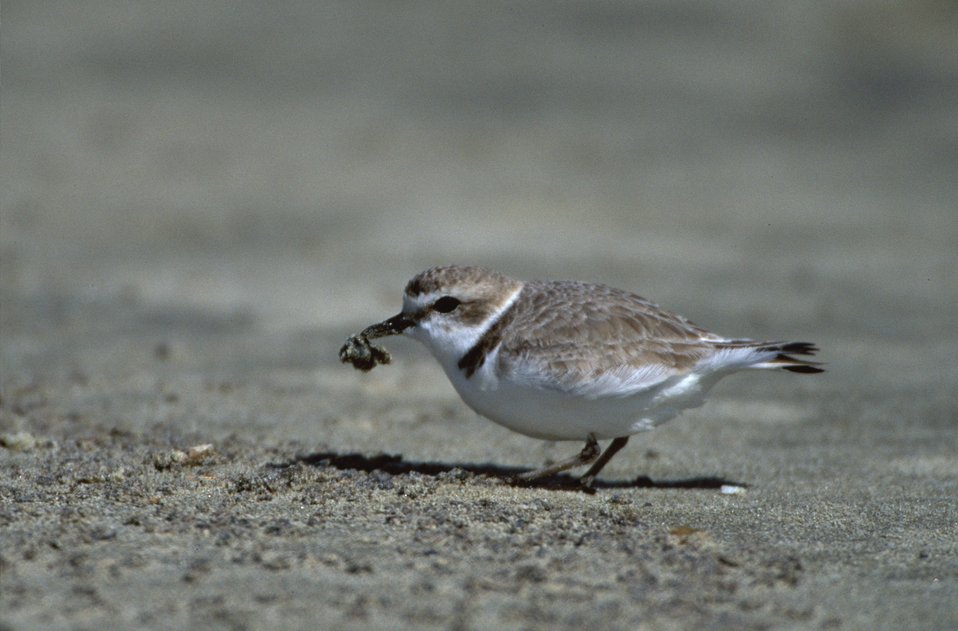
Western Snowy Plover Adult Feeding

Credit: D. Pitkin/USFWS

The Pacific Coast population of the western snowy plover is federally listed under the Endangered Species Act of 1973 as threatened.

Threats include poor reproductive success, resulting from human disturbance, predation, and inclement weather, combined with permanent or long-term loss of nesting habitat to encroachment of non-native European beachgrass and urban development. This has lead to a decline in active nesting, as well as an overall decline in the breeding and wintering population of the snowy plover along the Pacific coast

Human activities, such as walking, jogging, running pets, horseback riding, and vehicle use, are key factors in the ongoing decline in breeding sites and populations. The nesting season of the western snowy plover (March through September) coincides with the period of greatest human use (Memorial Day through Labor Day) on beaches of the west coast. Intensive beach use by humans may result in abandonment of nest sites, reductions in nest density, and reductions in nesting success.